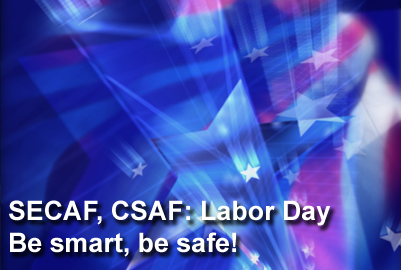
Labor Day: Be smart, be safe!

Secretary of the Air Force Michael Donley and Chief of Staff Gen. Norton Schwartz urge all members of the Air Force family to maintain their focus on safety during this holiday weekend and beyond.